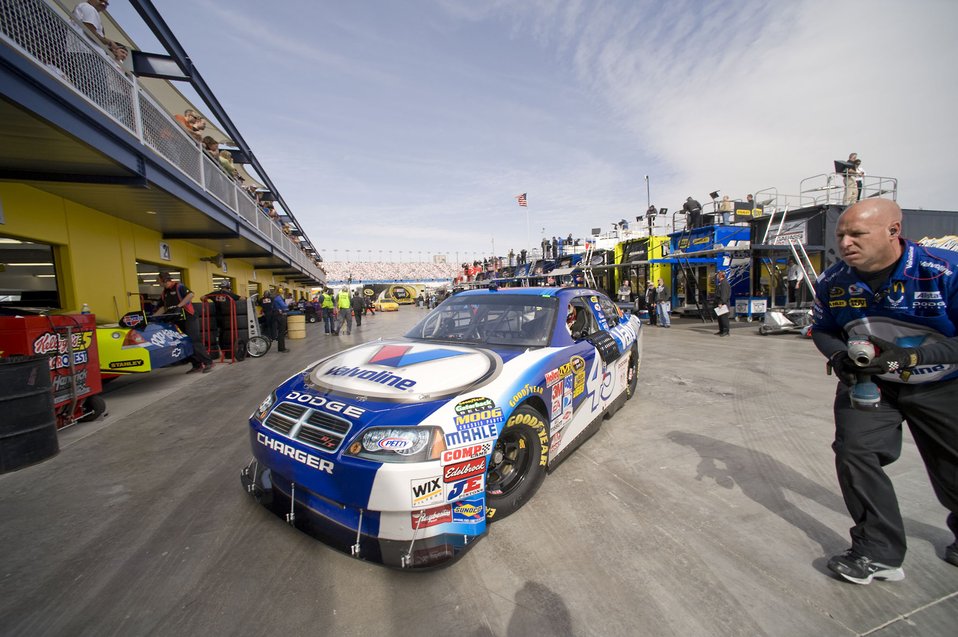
Air Force teams with NASCAR to aid recruiting

Jeff Seaberg guides Reed Sorenson into the garage area during the first Sprint Cup practice session Feb. 28 at Las Vegas Motor Speedway in Nevada. Mr. Seaberg is the truck driver and catch-can man for the Air Force sponsored No. 43 Dodge, and Mr. Sorenson is the driver of the No. 43 car.